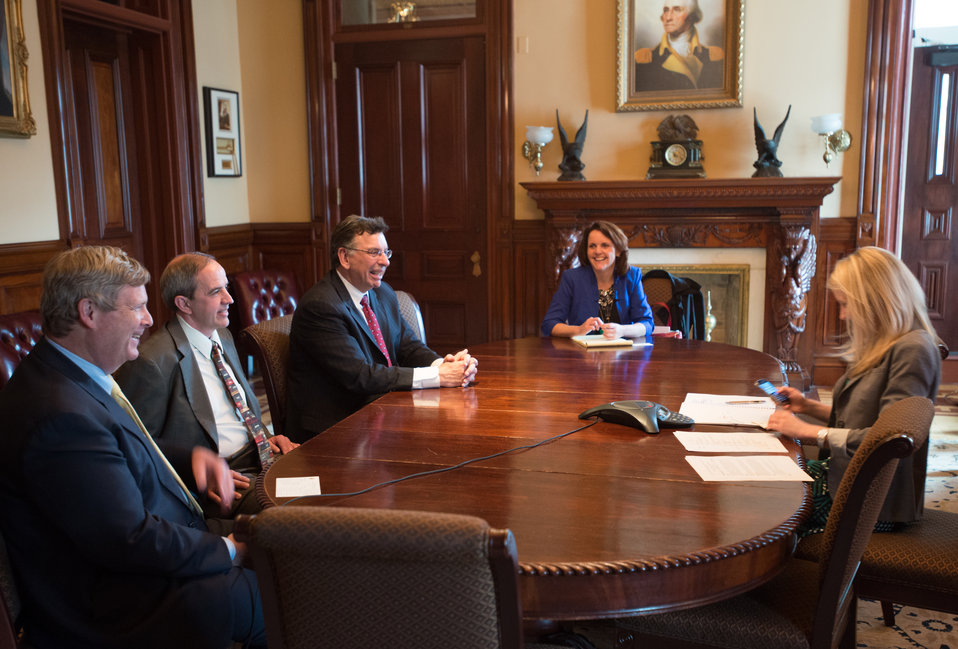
(L to R) Agriculture Secretary Tom Vilsack, Spruce Haven Farm and Research Center General Partner Doug Young, Innovation Center for U.S. Dairy Chief Executive Officer (CEO) Tom Gallagher, and Dairy Management Inc. Strategic Initiatives Vice President Christina McDermott chat with Agriculture Office of Communication Press Secretary Courtney Rowe as she establishes a teleconference call with news media, after the signing of a Memorandum of Understanding (MOU) at the Innovation Center For U.S. Dairy Sustainability Council Meeting, on Wednesday, Apr. 24, 2013. The teleconference took place in the historic Secretary of War suite, at the White House, in Washington, D.C. The objectives of the MOU are to increase the construction of anaerobic digesters and explore innovative ways to use products previously considered waste streams from dairy production, processing and handling.